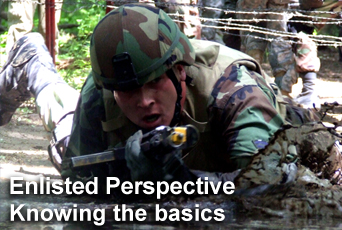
'Perspective' discusses knowing the basics

In the newest